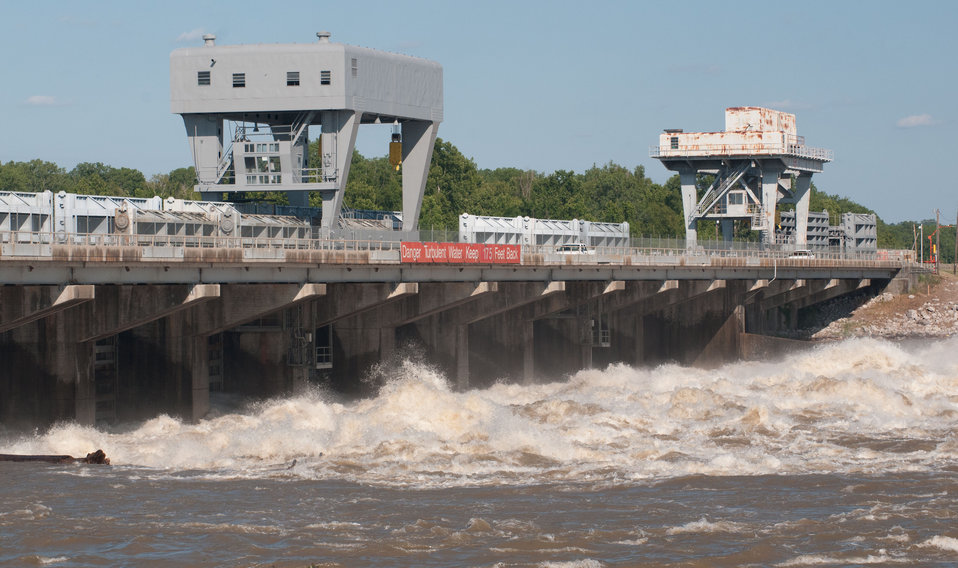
The Army Corps of Engineers conduct daily depth measurements along the intake side of The Old River Control Complex, Low Sill Structure in Concordia Parish, LA, on Tuesday, May 17, 2011. The measurements tell both the condition along the intake “ramp” and allow them to calculate the flow through the gates. The Old River Control Complex is designed to channel as much as 30 percent of the Mississippi River’s flow into the Gulf of Mexico through it’s eleven 44-foot wide gates across 566 foot span that separates the Mississippi and (the outflow channel to the) Red and Atchafalaya Rivers. Rated at 300,000 million gallons per minute (note: That’s more than seven Olympic sized swimming pools every second). Although this helps the Mississippi River, it (along with other concerns, puts back pressure on the Red River and other waterways, possibly causing some flooding of farms to avoid a catastrophic breech of the levee system. Most of the gates have been opened by a rolling crane and stored in racks. Debris, some as larger than telephone polls make their way through the gates and pool in eddies. The constant motion and contact with other objects, strip trees of their branches and bark. 20-30 pound Carp can frequently be seen jumping out of the white water.